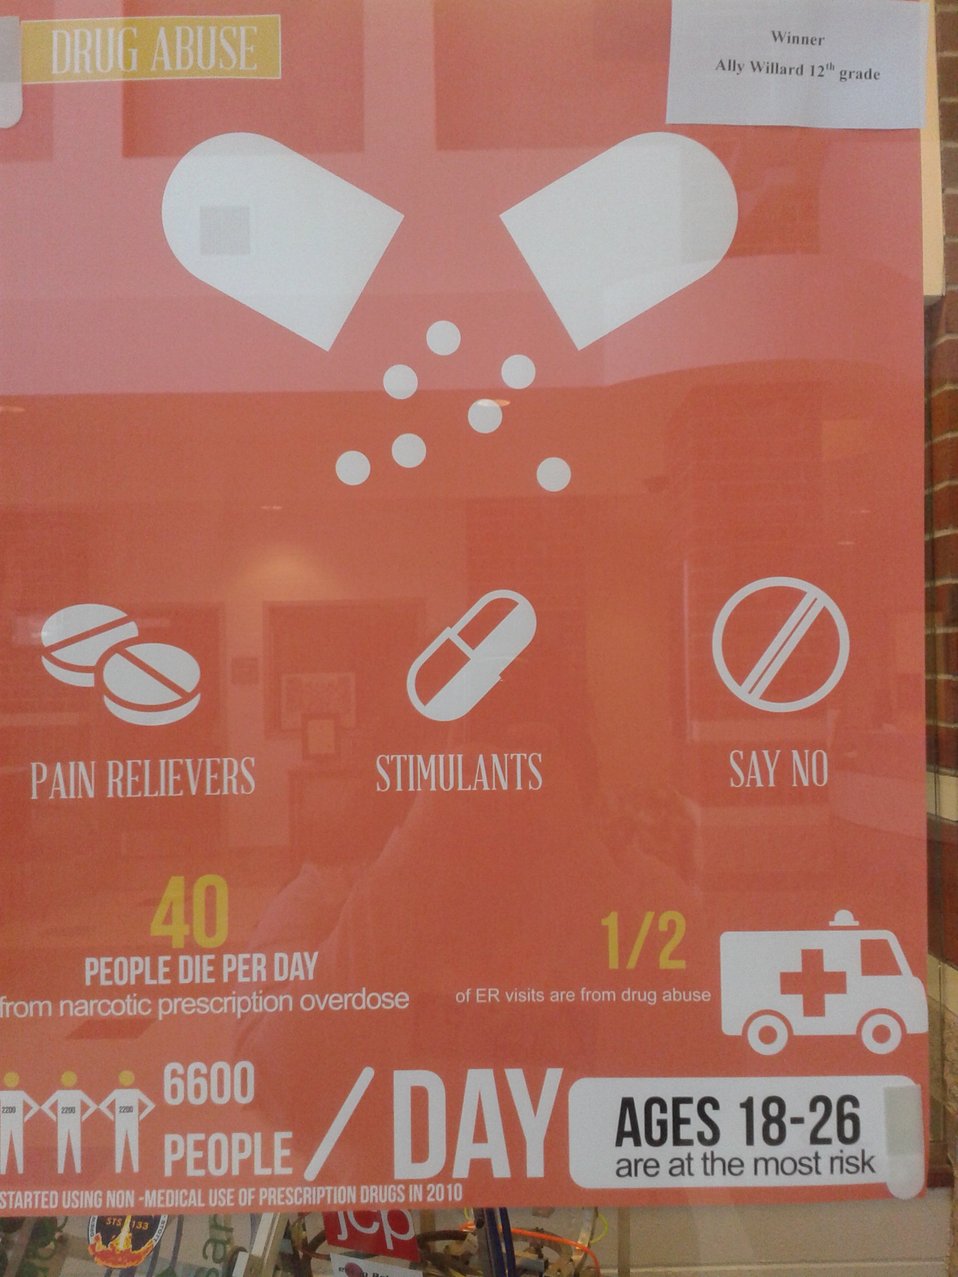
South Carolina's NDFW 2013

Horry County Schools, S.C., Academy for the Arts and Science, and Technology holds NDFW 2013 Event.